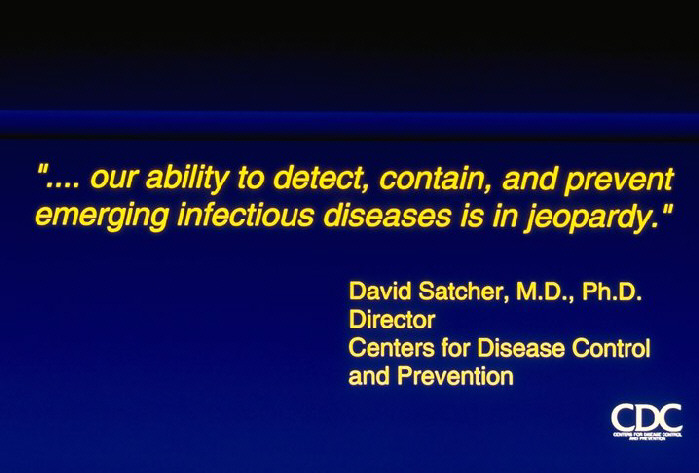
Preparing for Emerging Infectious Diseases (quote, Dr. David Satcher)